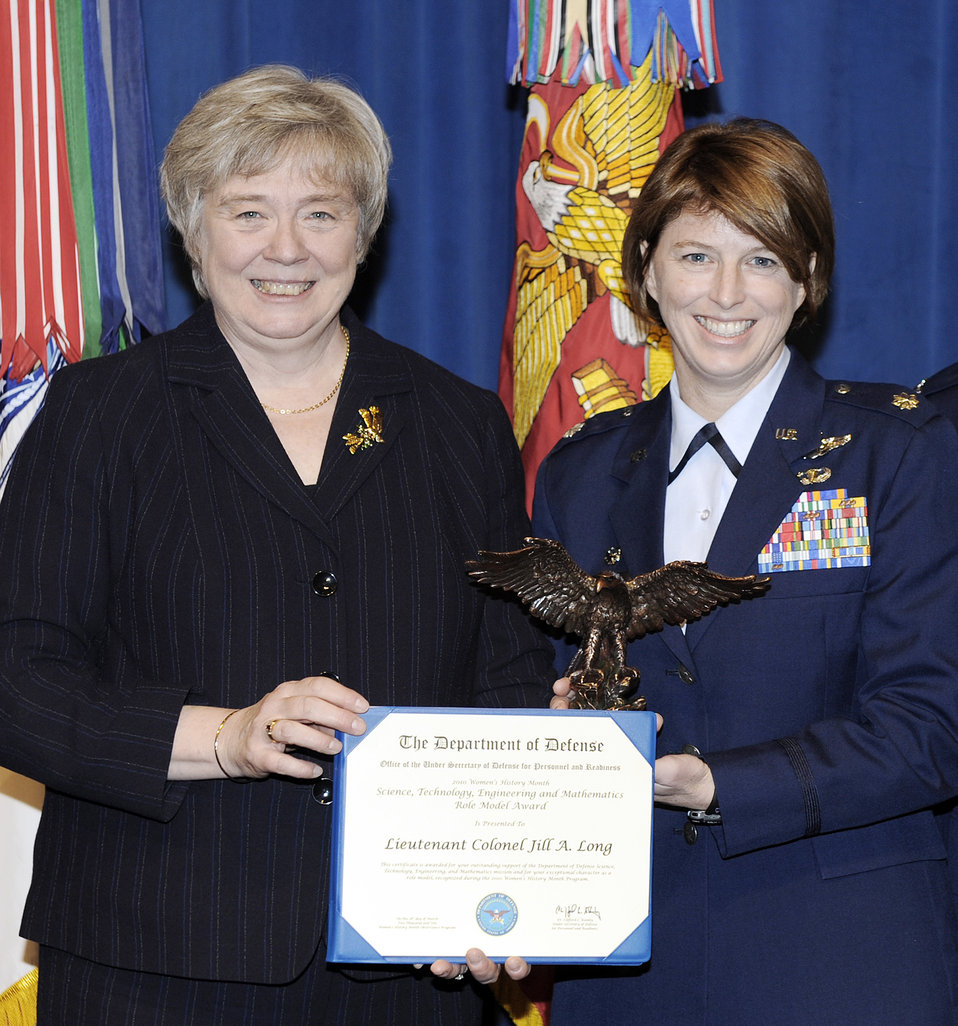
STEM Award

Gail McGinn, deputy undersecretary of defense for plans, presents the 2010 Science, Technology, Engineering and Math Role Model Award to Lt. Col. Jill Long during a Pentagon ceremony March 18, 2010.